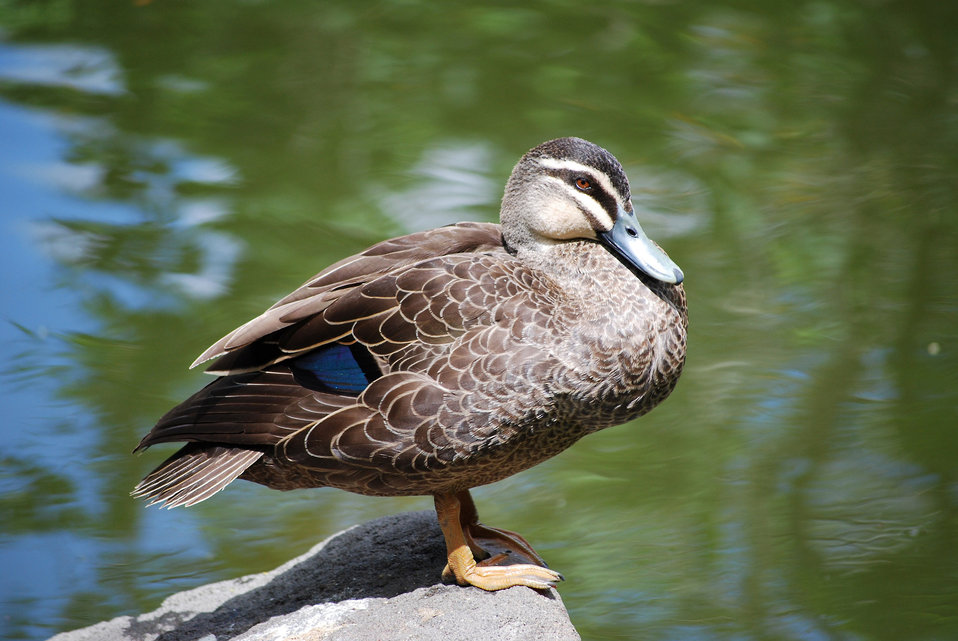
Duck on a rock

Duck posing on a rock.